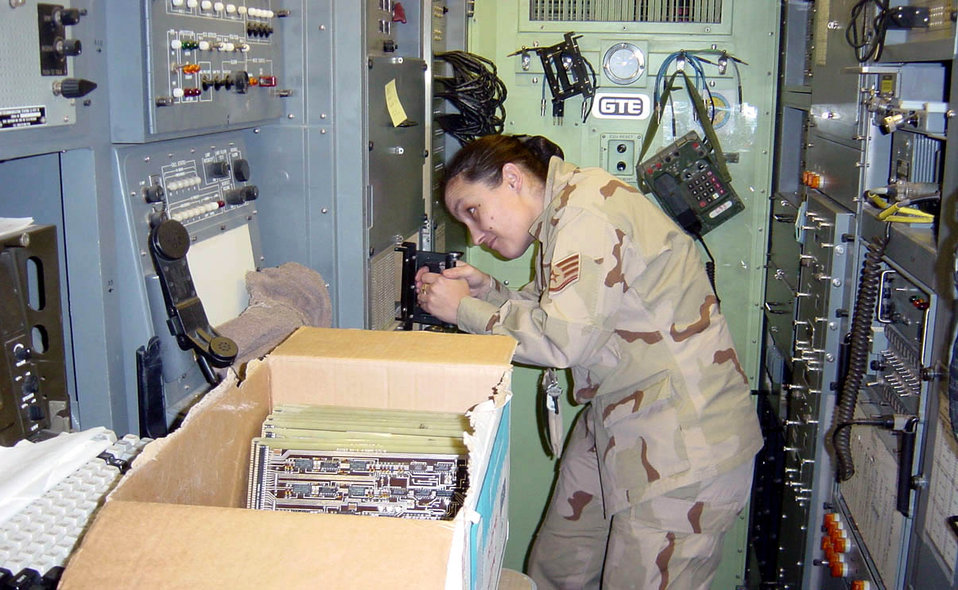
Van guards

OPERATION SOUTHERN WATCH -- Staff Sgt. Lisa Ling pulls circuit boards during regular maintenance on a communications van. She is from the California Air National Guard's 234th Combat Communications Squadron from Hayward Air National Guard Station.